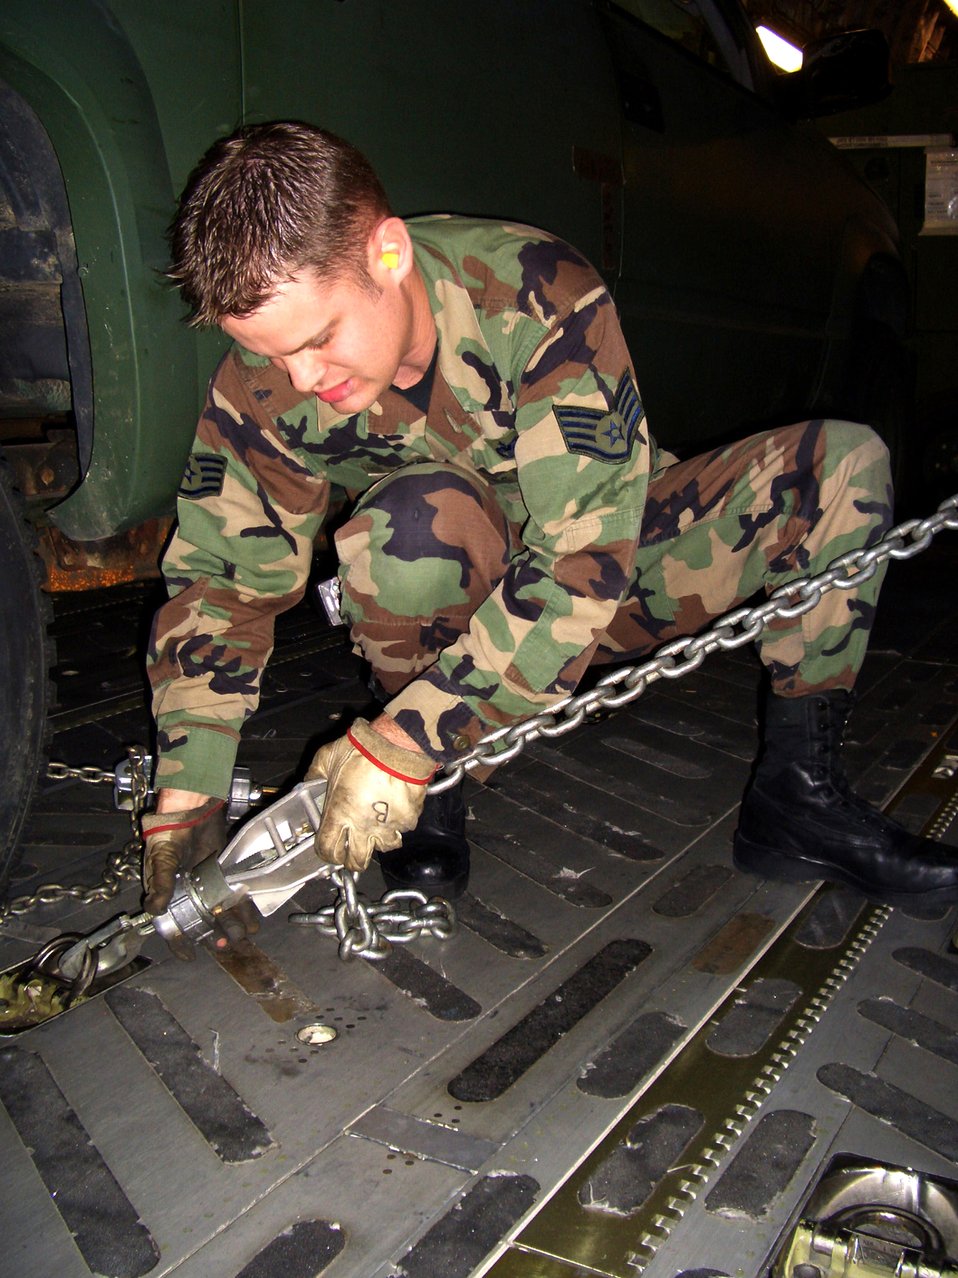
AMC assists earthquake response

MCGUIRE AIR FORCE BASE, N.J. -- Staff Sgt. Zach Brown ties and secures rolling stock to the floor of a C-17 Globemaster III aircraft here. The aircraft left here to deliver humanitarian relief supplies and members of the 621st Contingency Response Wing to Pakistan Oct. 10. Sergeant Brown is the 305th Aerial Port Squadron noncommissioned officer in charge of aircraft services support.